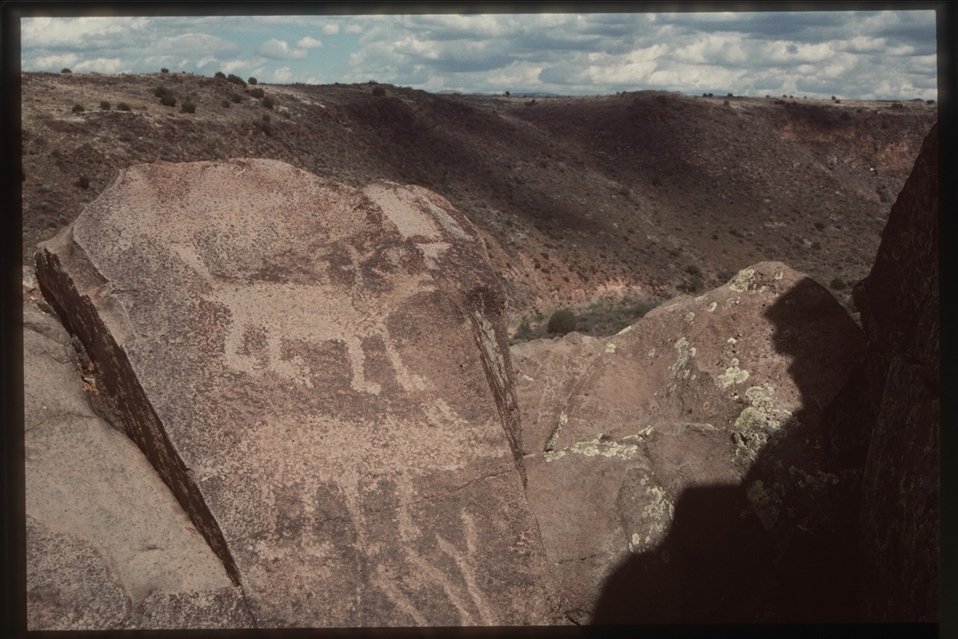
Petroglyphs rest on grounds overlooking the Agua Fria National Monument landscape. Archaeologists believe residents dwelled here in 1200 A.D.